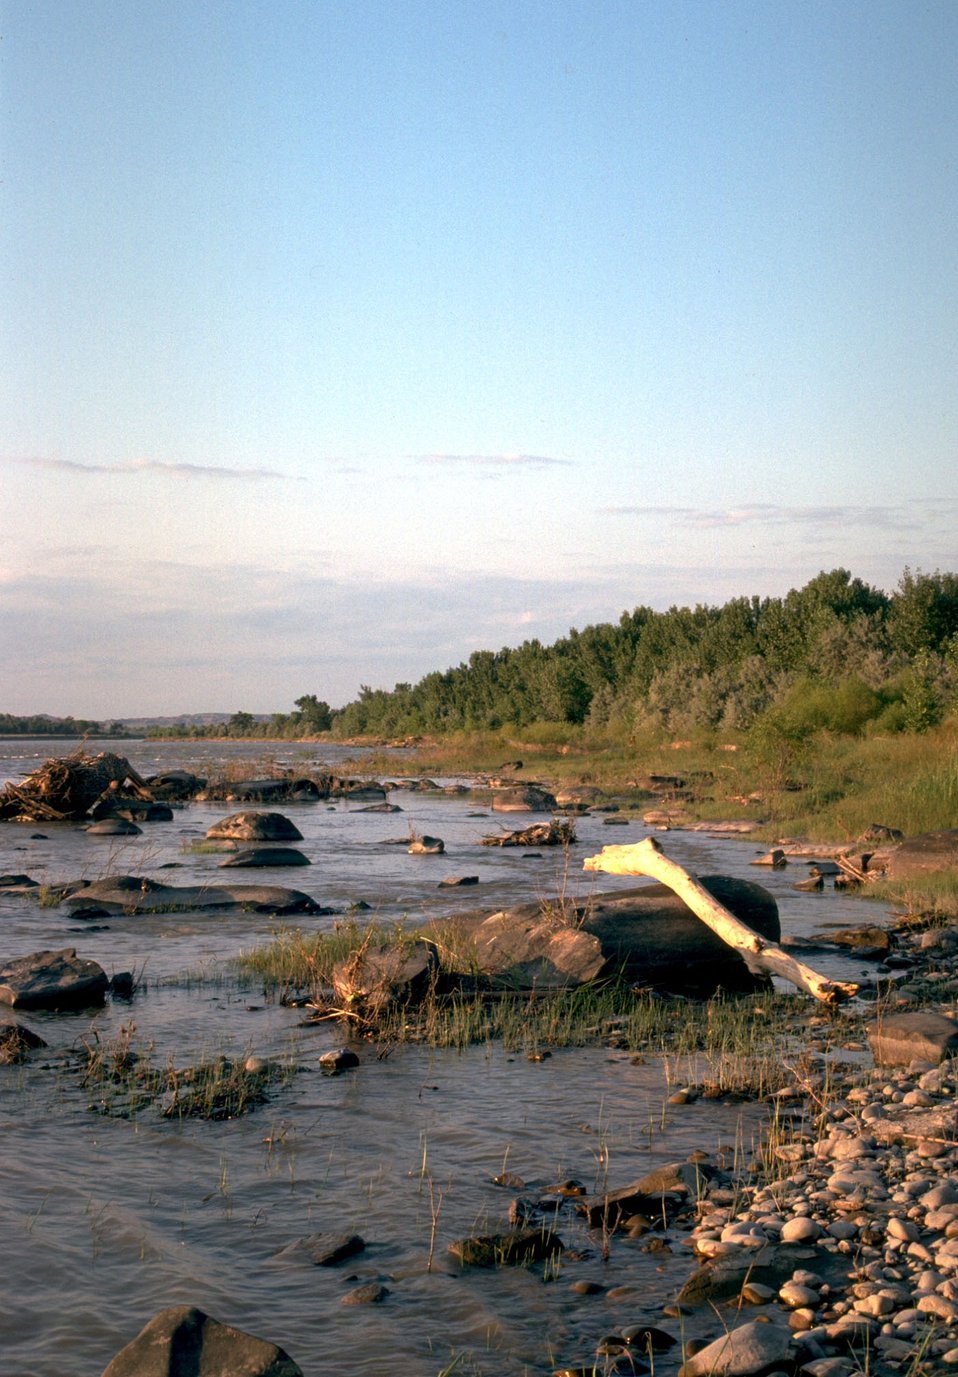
William Matthews wildlife area